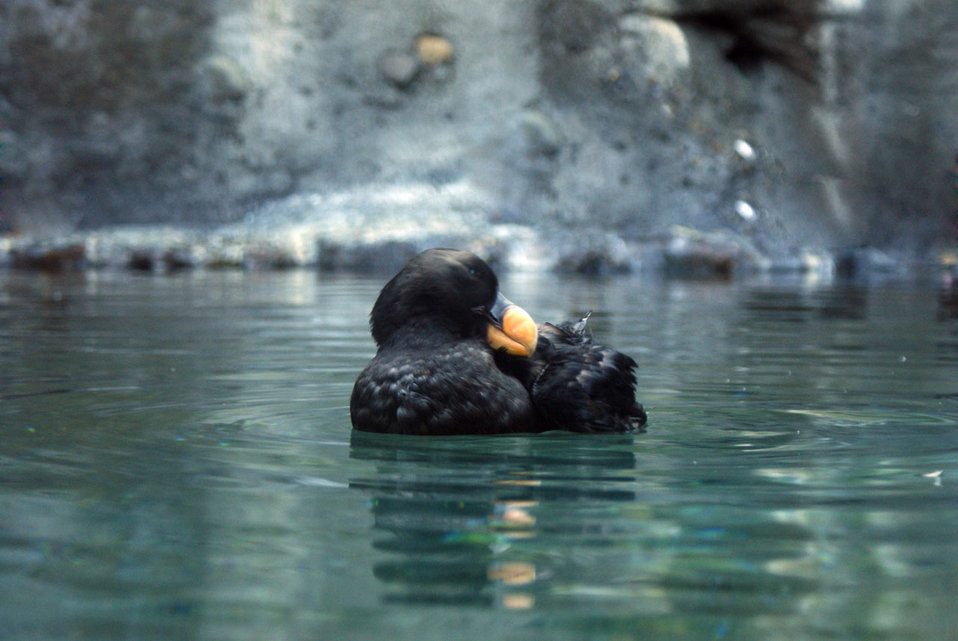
Black puffin at the point defiance zoo..